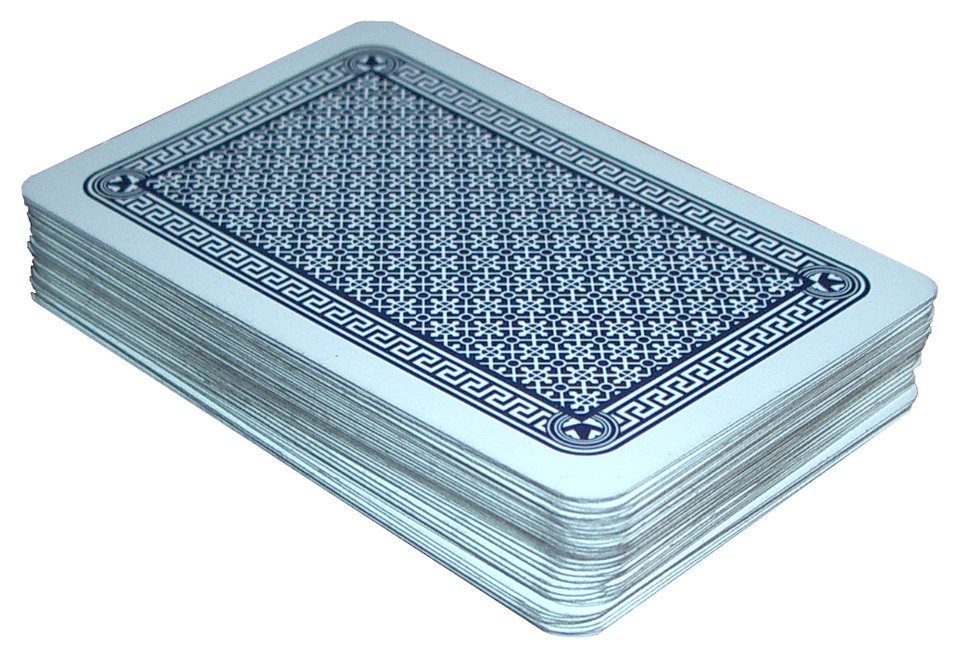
Pack of playing cards.